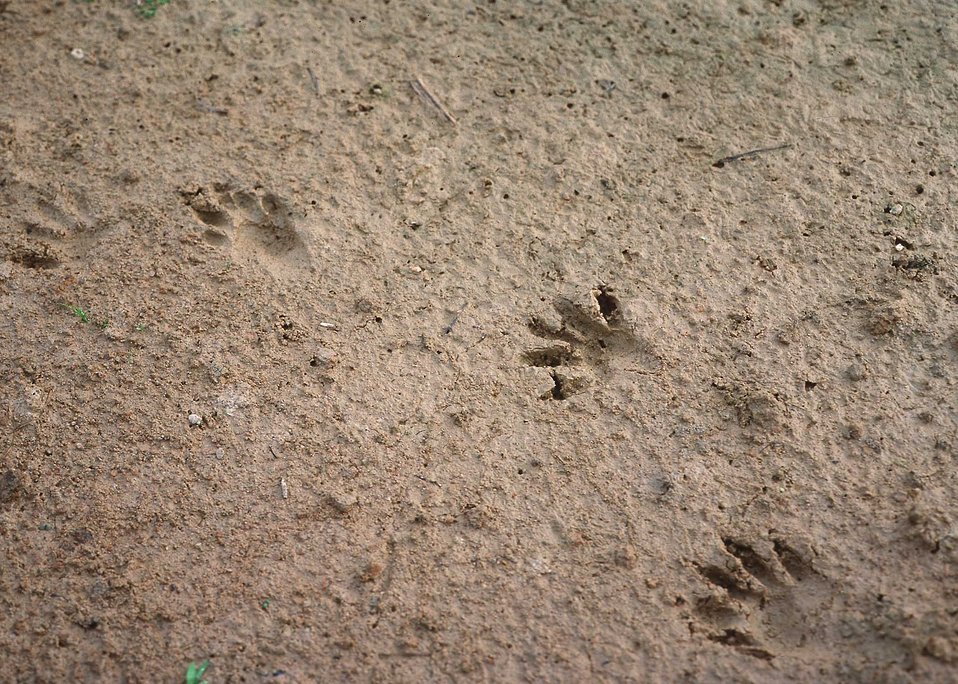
Wildlife tracks.